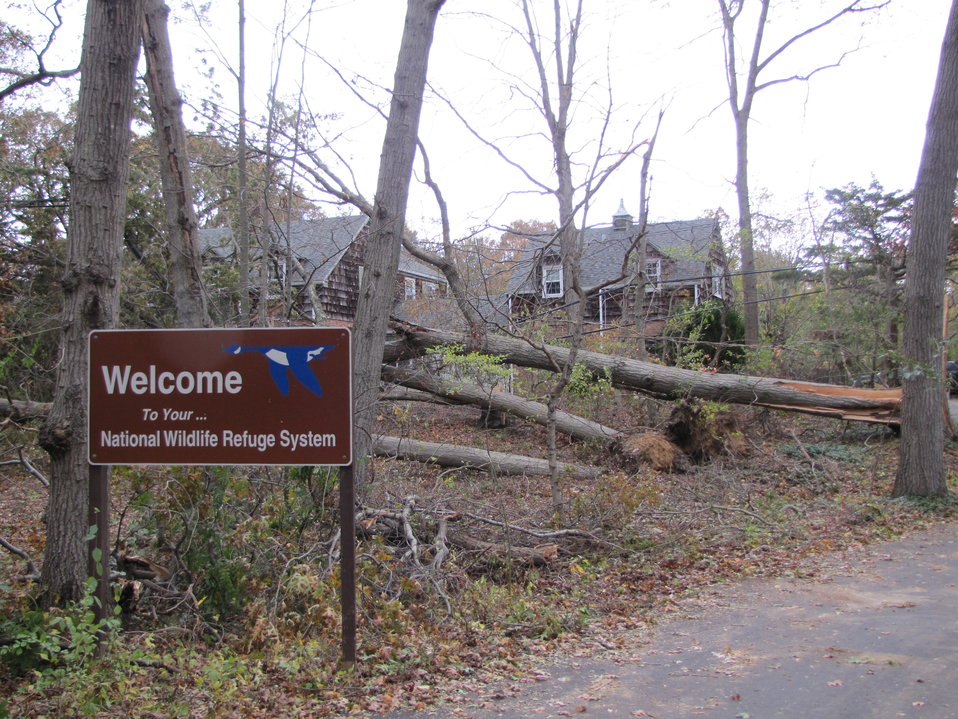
Tree and power line damage at Target Rock National Wildlife Refuge (NY)

Tree and power line damage behind the sign that normally welcomes visitors to Target Rock National Wildlife Refuge.